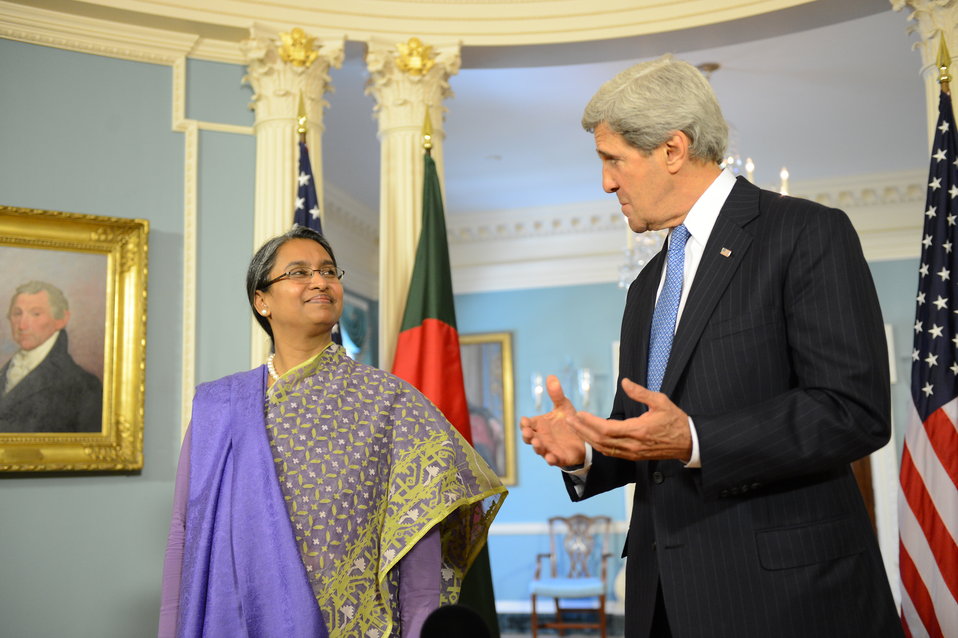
Secretary Kerry Meets With Bangladeshi Foreign Minister Moni

U.S. Secretary of State John Kerry meets with Bangladeshi Foreign Minister Dipu Moni at the U.S. Department of State in Washington, D.C., on May 17, 2013.